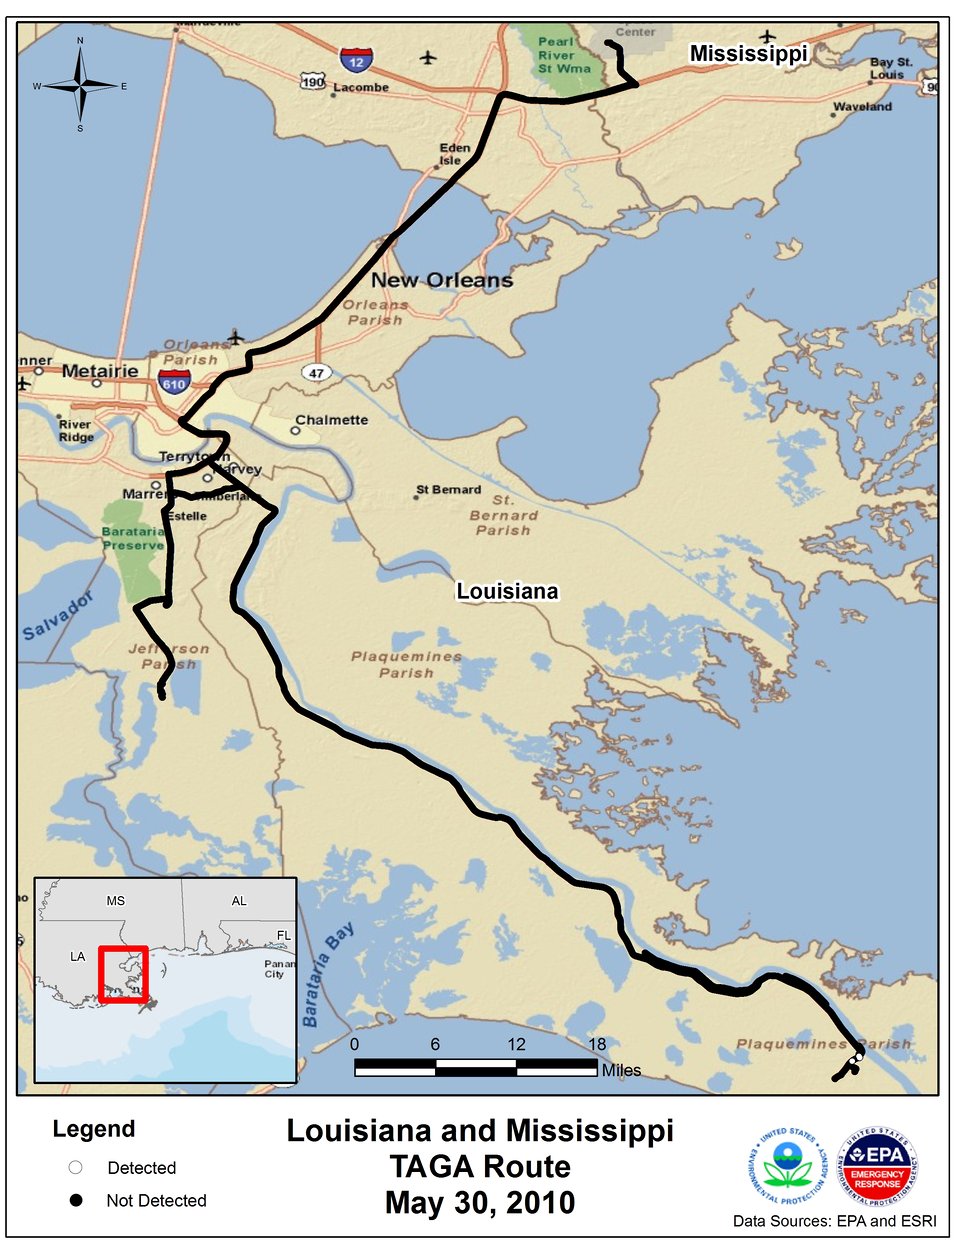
EPA TAGA Air Monitoring Locations May 30, 2010